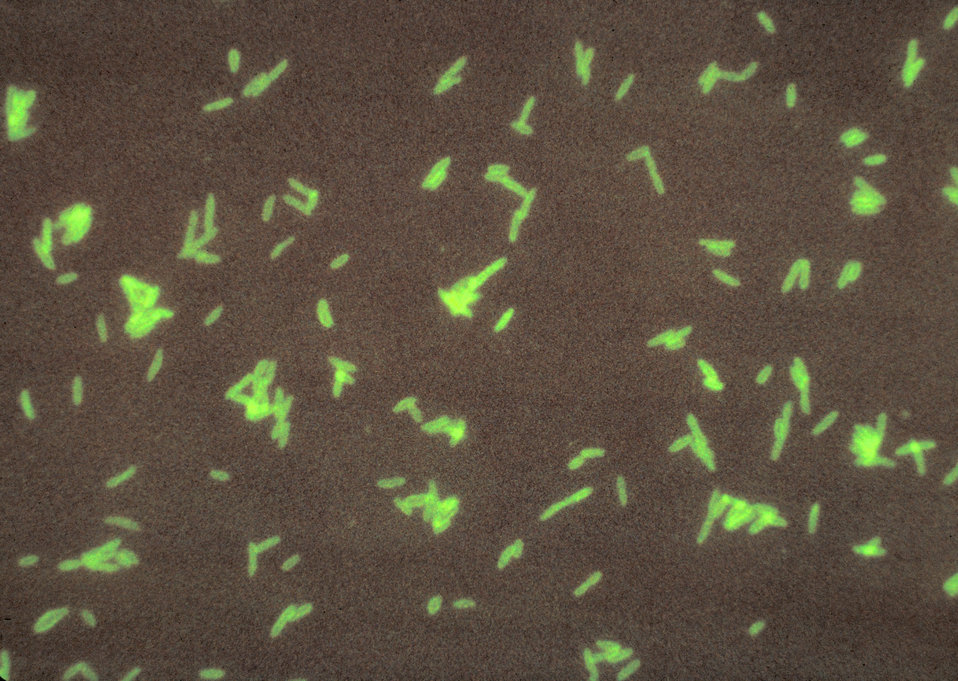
Legionella pneumophila cultured on supplemented Mueller Hinton medium, and stained using direct FA technique.